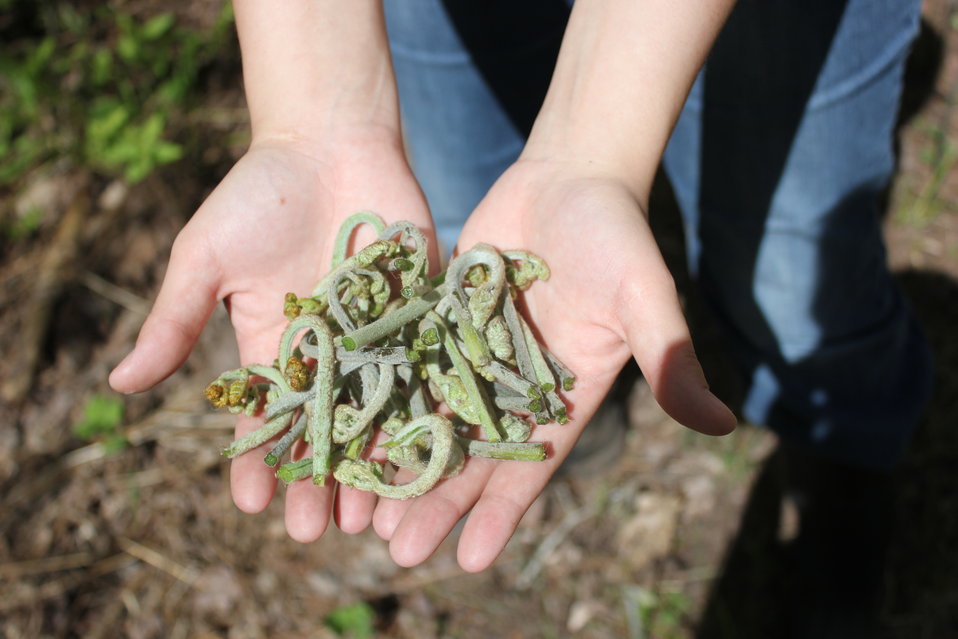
Native food Bracken Fern Fiddleheads

The curly tips of the fiddlehead fern can be found in early spring before they open to reveal a full taste akin to asparagus.